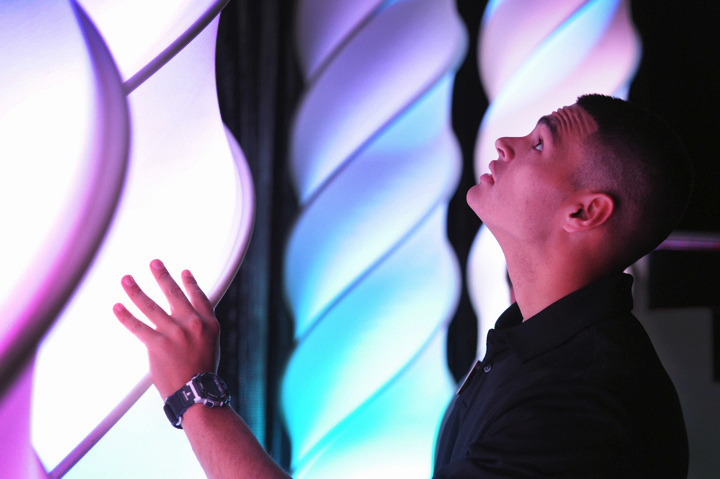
Airmen win honors at worldwide talent search

Senior Airman Jamie Ramirez, a ground radio journeyman from Beale Air Force Base, Calif., adjusts the stage lighting before the vocal auditions portion of the 2011 Tops in Blue worldwide auditions held at the Bob Hope Performing Arts Center, Lackland Air Force Base, Texas, Dec. 9, 2010. Airman Ramirez was responsible for aligning the 50-foot lighting fixtures on the stage in preparation for the final show. Technical team contestants are responsible for stage crew, lighting, and audio equipment during the 10-day audition. Airman Ramirez was named best technician for the competition.